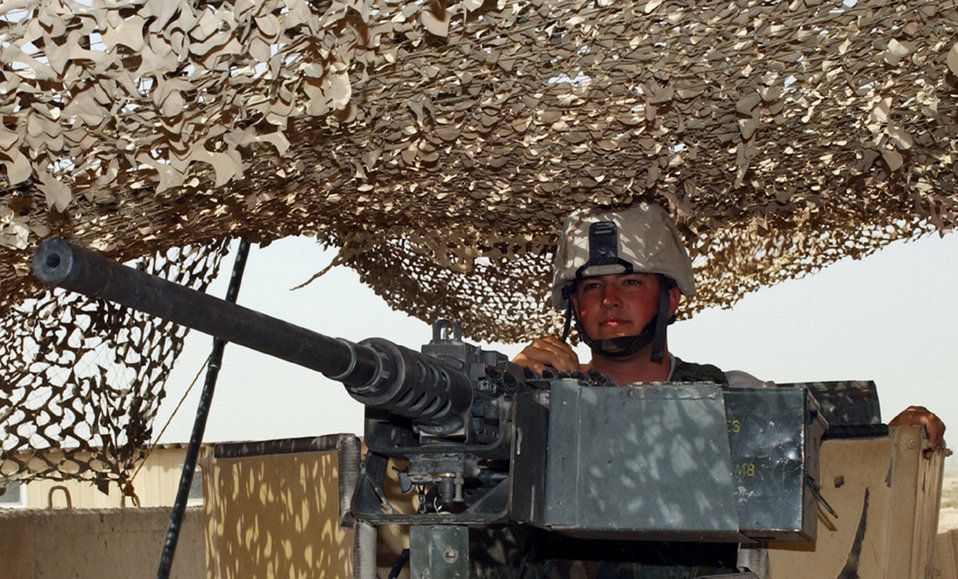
On the lookout

BAGHDAD, Iraq -- Senior Airman Ryan Roberts mans a machine gun from a defensive fighting position designed to offer 360 degrees of protection for air operations supporting the war on terrorism here. Airman Roberts is assigned to the 447th Expeditionary Security Forces Squadron and is deployed from Altus Air Force Base, Okla.